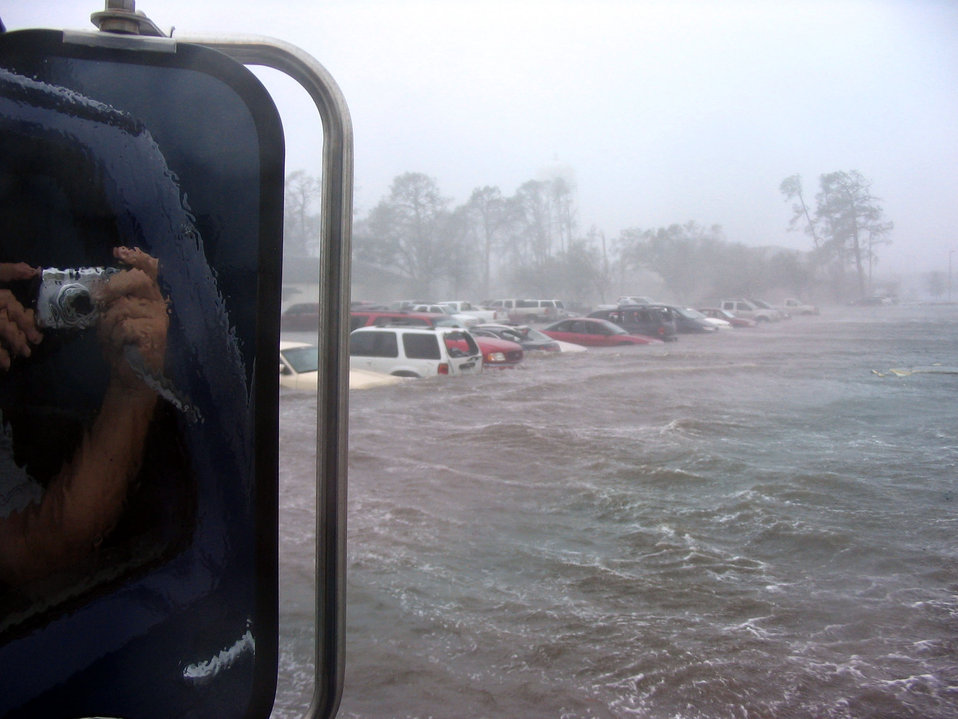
People venture outside Keesler shelters

KEESLER AIR FORCE BASE, Miss. -- As Hurricane Katrina struck the base, rising waters swallowed parked cars. The base and the 6,000 sheltered military students, permanent party, civilians and their families survived the Category 4 hurricane with no casualties. The initial damage was catastrophic to base infrastructure. The base is currently in the assessment and recovery stage.